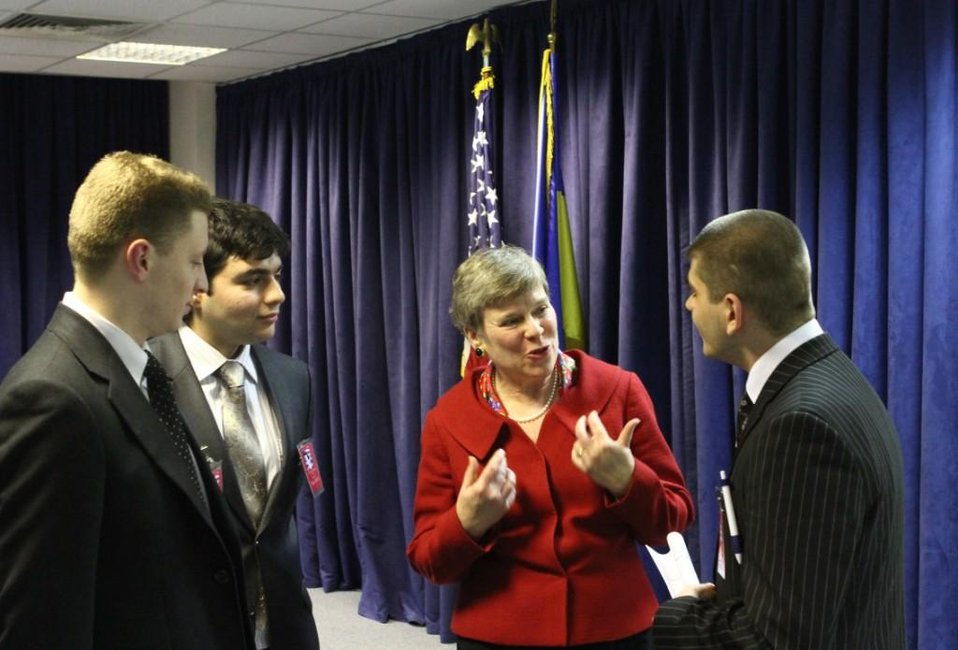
Assistant Secretary Gottemoeller Meets With Students

U.S. Assistant Secretary of State for the Bureau of Arms Control, Verification and Compliance Rose Gottemoeller meets with students in Kyiv, Ukraine, on February 7, 2011.